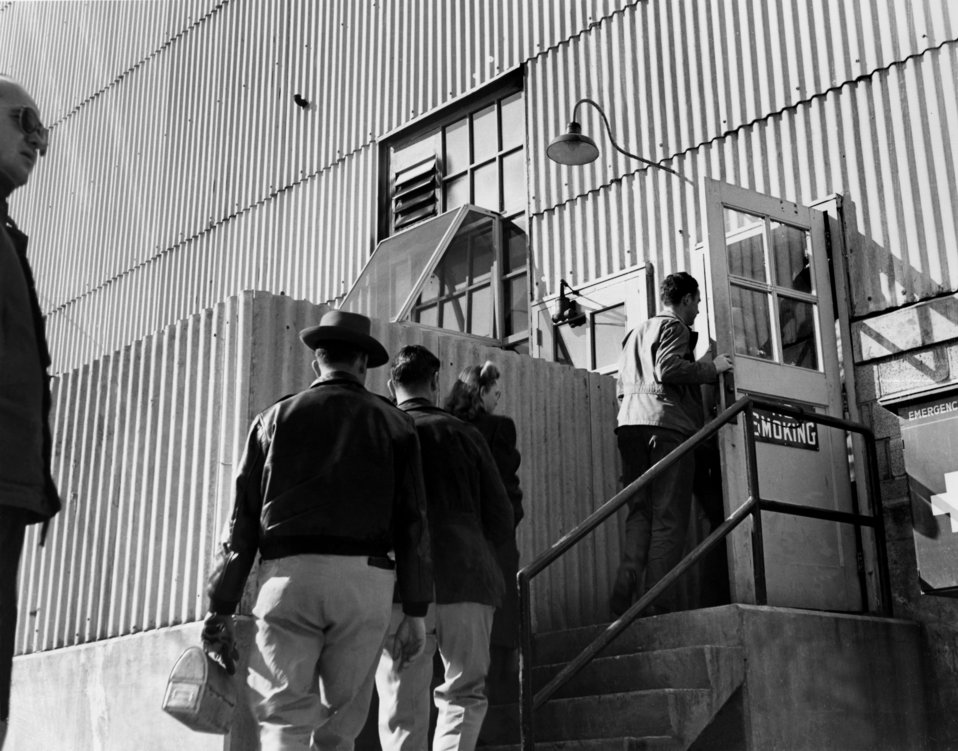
Workers Entering BLDG. at K-25 Oak Ridge 1949

5466-1 DOE photo Ed Westcott 2-23-1949 Oak Ridge Tennessee